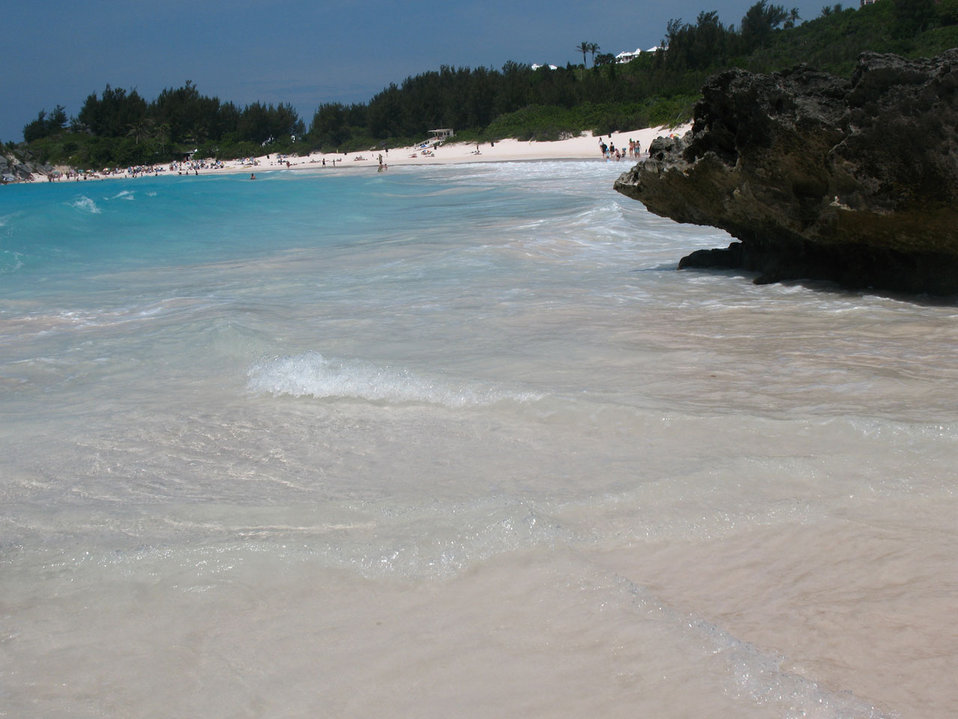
Bermuda

First thing in the morning.